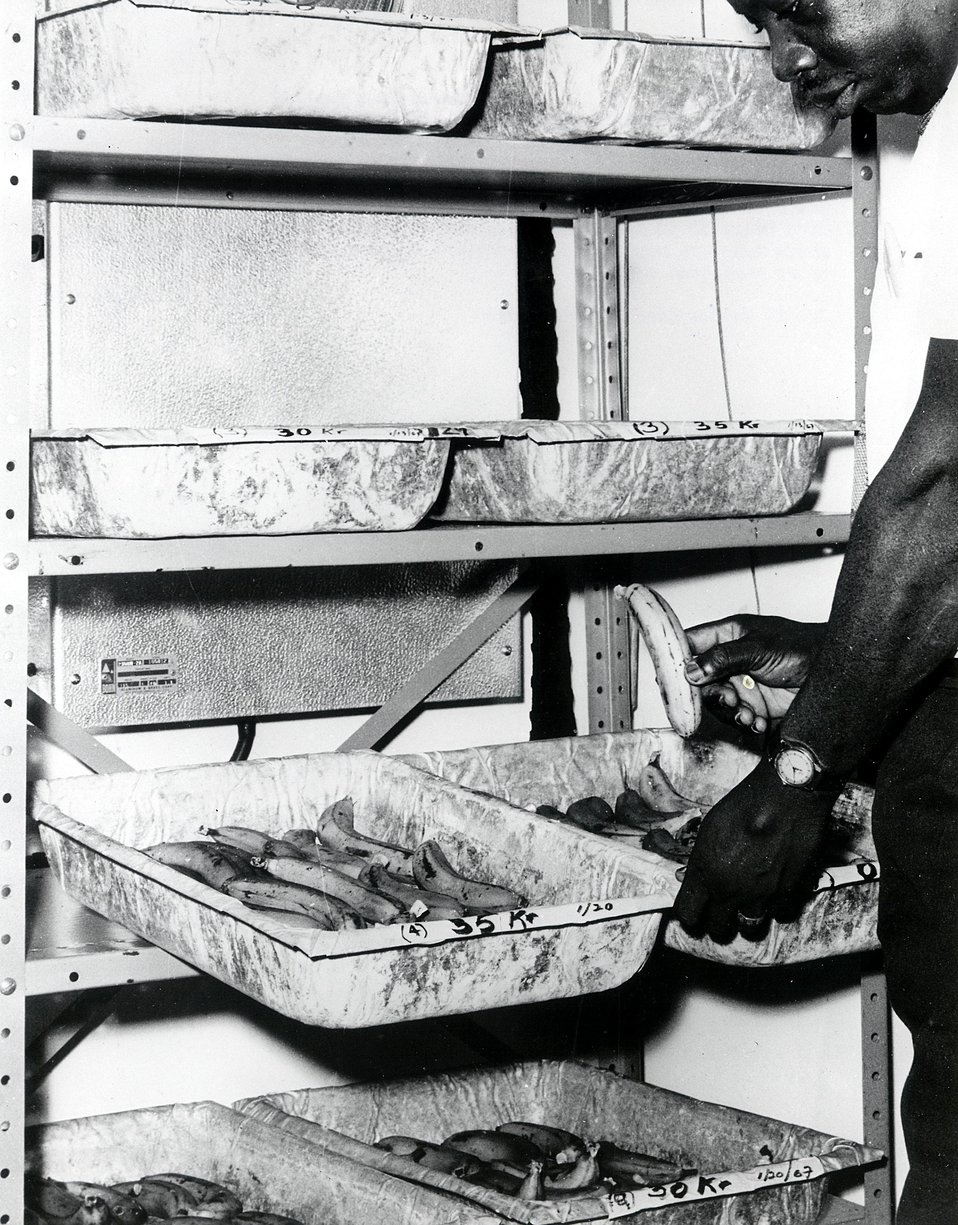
At the Puerto Rico Nuclear Center radiation studies are being conducted with tropical fruits including bananas, plantains, and mangoes to determine the feasibility of this method for fruit preservation. Circa 1967.